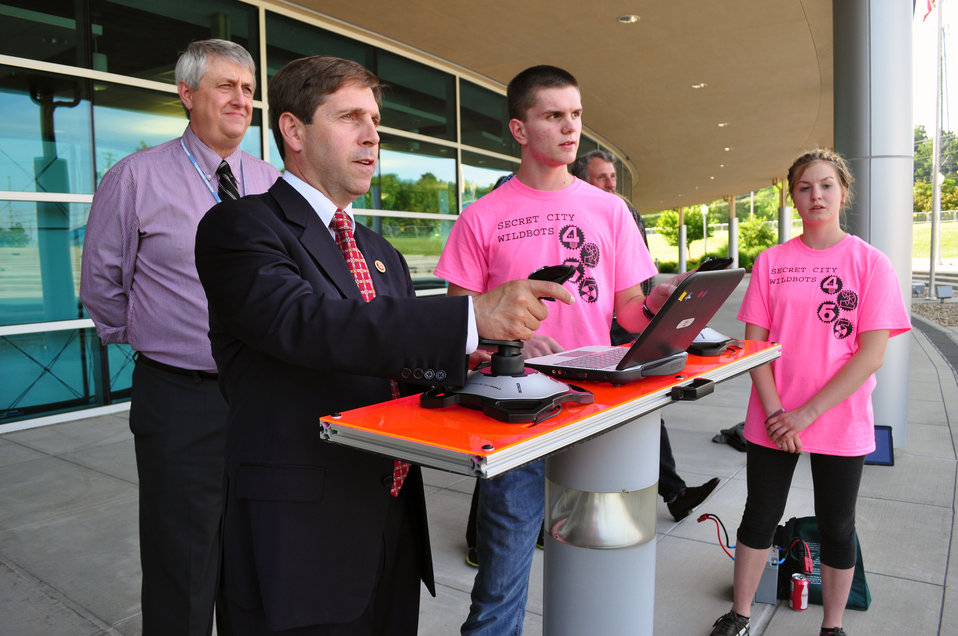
Congressman Chuck Fleischmann with Oak Ridge HS Robotics Team Tennessee Valley Corridor 2013 Oak Ridge

13-062 DOE photo Lynn Freeny 5-29-2013 Oak Ridge Tennessee